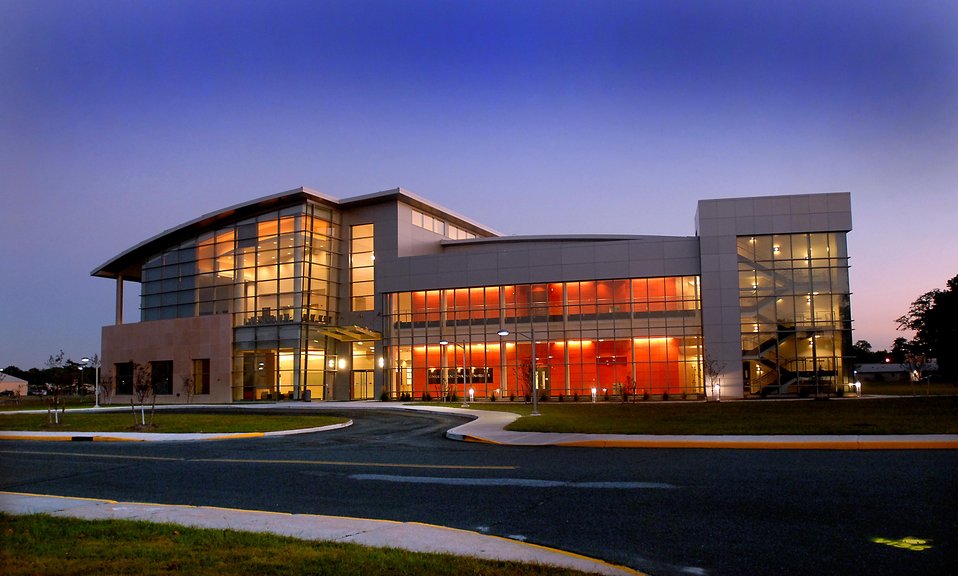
The Center for Functional Nanomaterials at Brookhaven National Laboratory.

The Nanoscale Science Research Centers (NSRCS) supported by basic energy sciences will be research facilities for the synthesis, processing, and fabrication of nanoscale materials. They will be collocated with existing user facilities to provide sophisticated characterization and analysis capabilities. In addition, NSRCS will provide specialized equipment and support staff not readily available to the research community. NRSCS will be operation as user facilities and be available to all researchers.